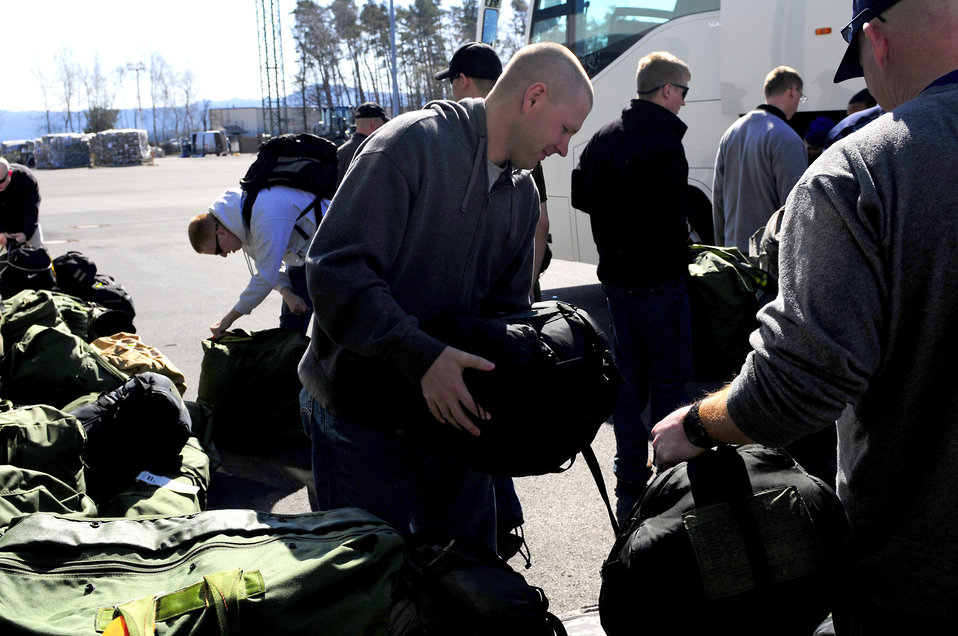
Airmen Support Joint Task Force Odyssey Dawn

U.S. Air Force Airmen from the 86th Civil Engineer Squadron load cargo on a bus in preparation for a deployment in support of Joint Task Force Odyssey Dawn, Ramstein Air Base, Germany, March 21, 2011. The U.S. Africa Command task force was established to provide operational and tactical command and control of U.S. military forces supporting the international response to the unrest in Libya and enforcement of United Nations Security council Resolution 1973. UNSCR 1873 authorizes all necessary measures to protect civilians in Libya under threat of attack by Qadhafi regime forces. JTF Odyssey Dawn is commanded by U.S. Navy Admiral Samuel J. Locklear, III.